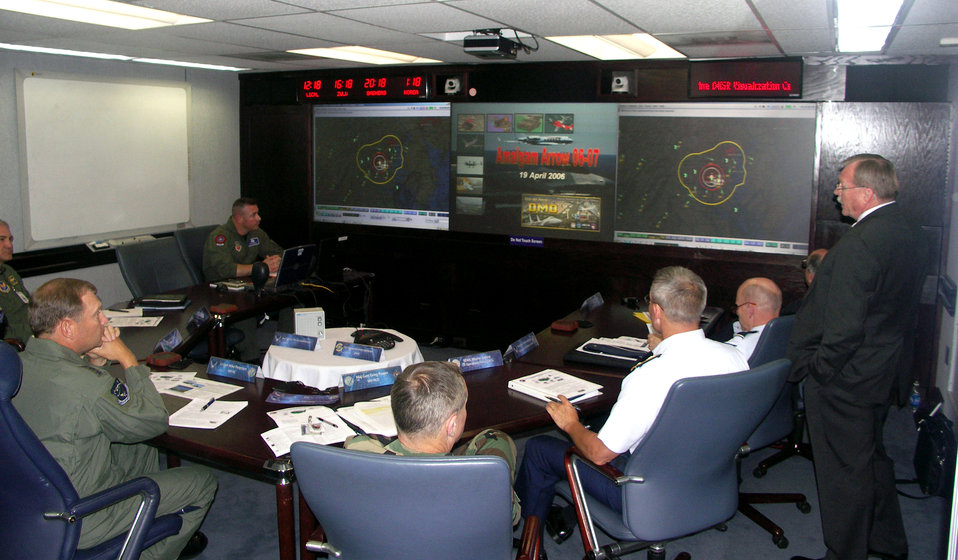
Center provides like-like situations

Air Force and Coast Guard leaders participate in a homeland defense exercise Wednesday, April 19, 2006, at the Pentagon's C4ISR Visualization Center. The center uses both virtual and real-world technologies to allow Department of Defense leaders to interact with experiments, exercises, wargames, training and real-world events.